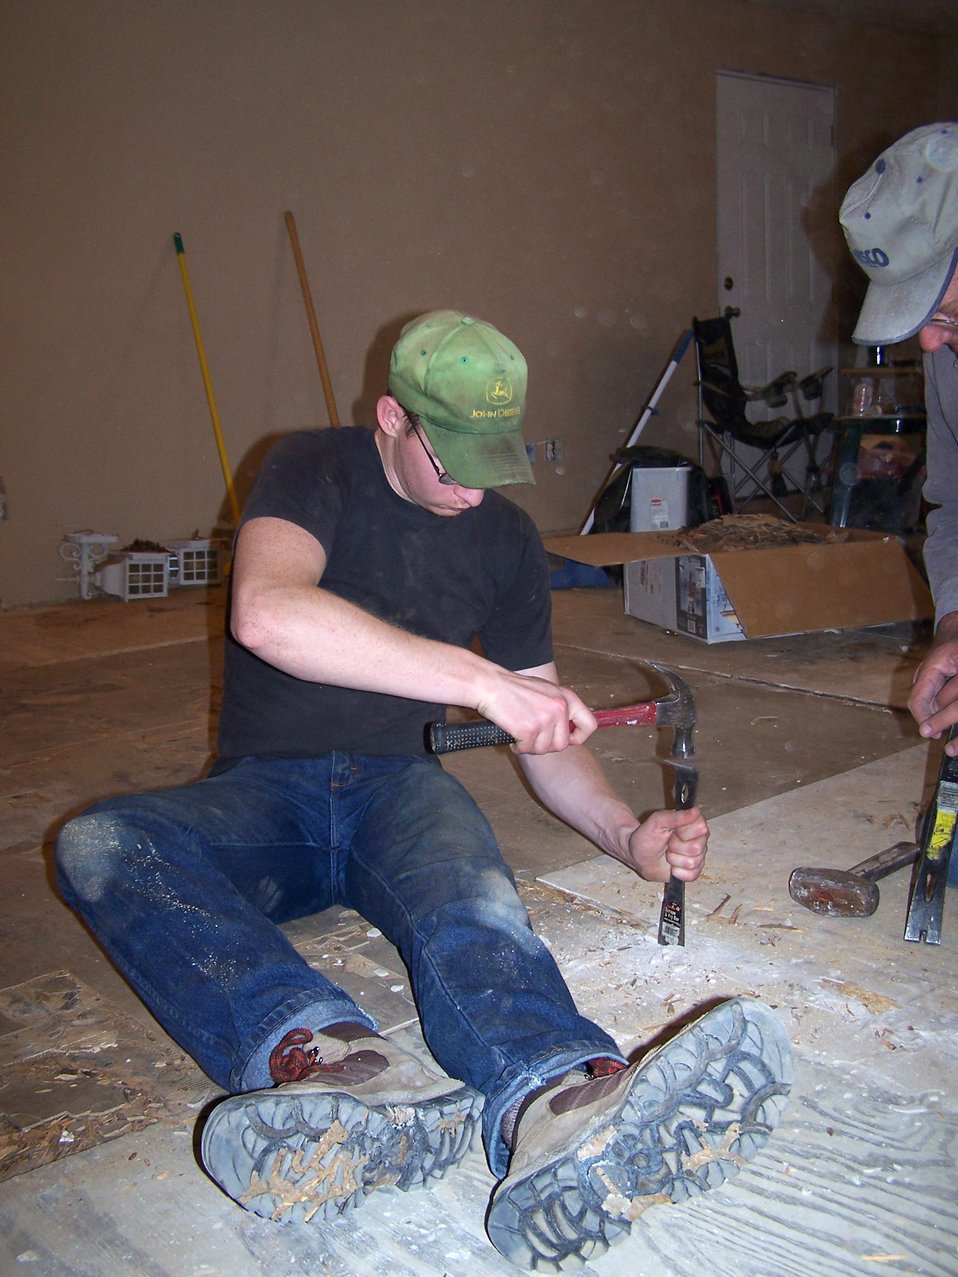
Airmen help pick up the pieces for those in need

Airman 1st Class Derek Bartholic works on restoring sub-flooring in a house in Bay St. Louis, Miss. The home was damaged by Hurricane Katrina more than a year ago. Airman Bartholic is a maintenance specialist assigned to the 354th Aircraft Maintenance Squadron from Eielson Air Force Base, Alaska. He was one of five Airmen who travelled from Eielson AFB to the Gulf coast to repair Hurricane Katrina-damaged homes.